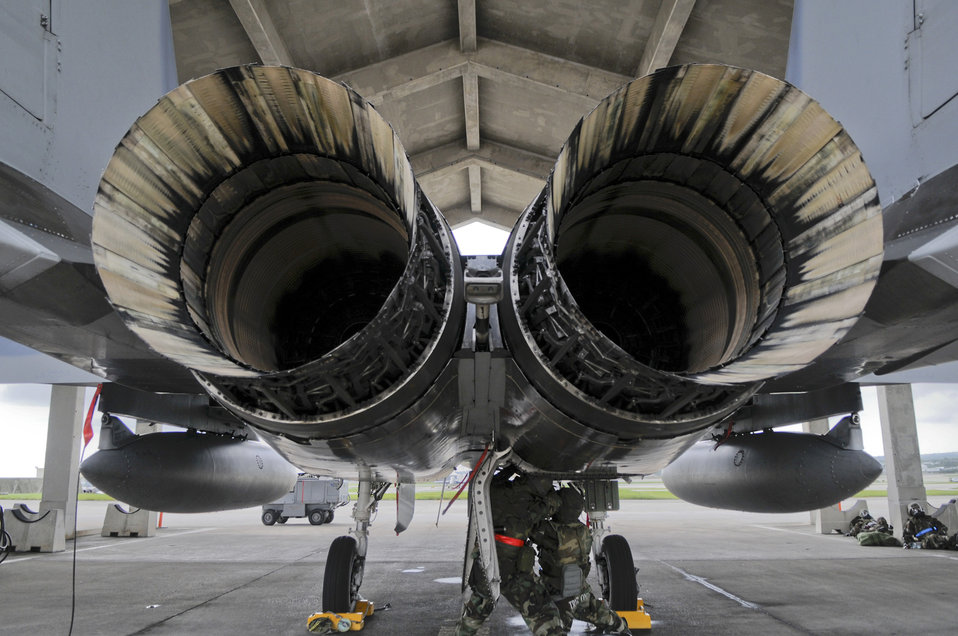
Local operational readiness exercise

Senior Airman Tyler Disney (left) and Airman 1st Class Jesus Gotay-Rivera perform maintenance on an F-15 Eagle’s propulsion system during May 19, 2011, Beverly High at Kadena Air Base, Japan. Airman Disney is assigned to the 44th Aircraft Maintenance Unit. Airman Gotay-Rivera is assigned to the 67th Aircraft Maintenance Unit.